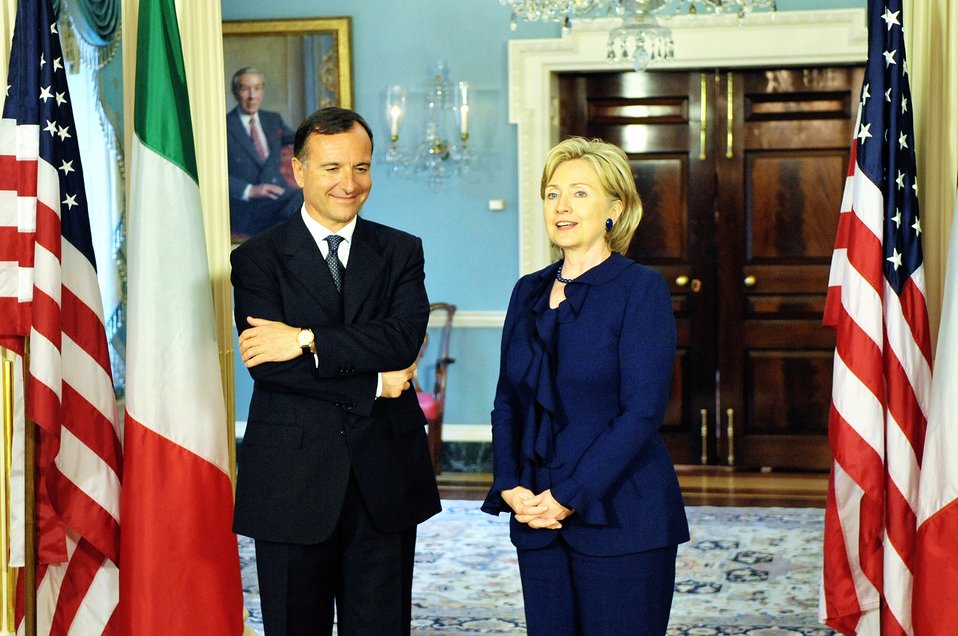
Secretary Clinton Meets With Italian Foreign Minister

U.S. Secretary of State Hillary Rodham Clinton hosts a bilateral meeting with Italian Foreign Minister Franco Frattini in the Treaty Room of the U.S. Department of State in Washington, DC May 7, 2009.